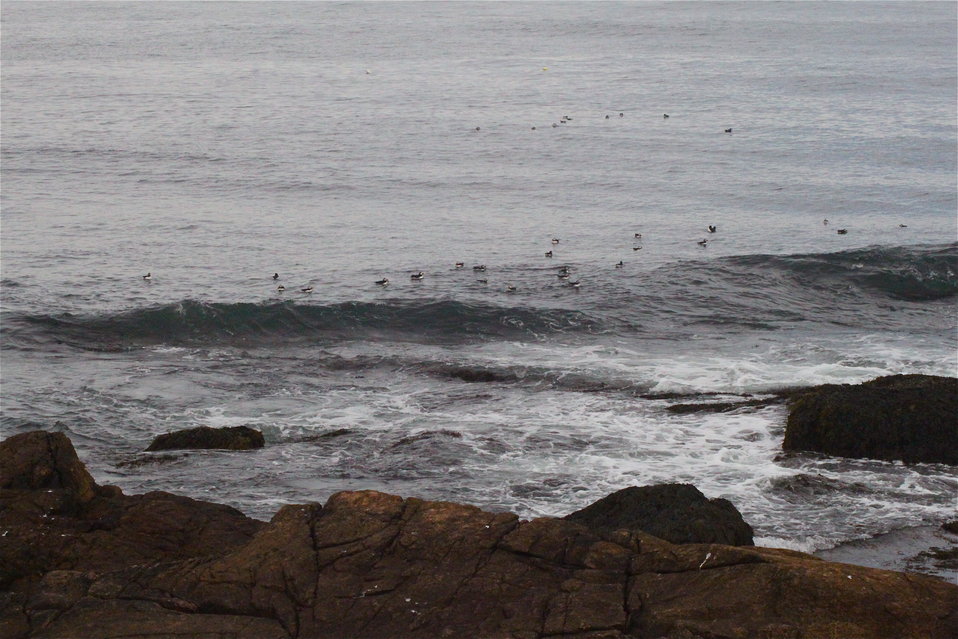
Puffins In Water